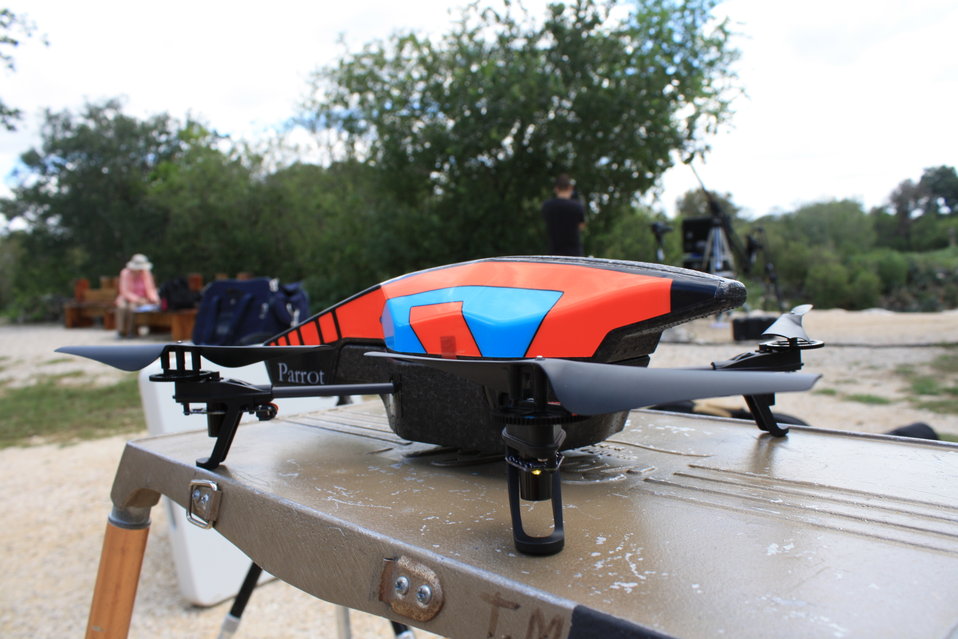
The 'drone'

A 'drone' was used to capture a daytime 'bats eye view' of the cave